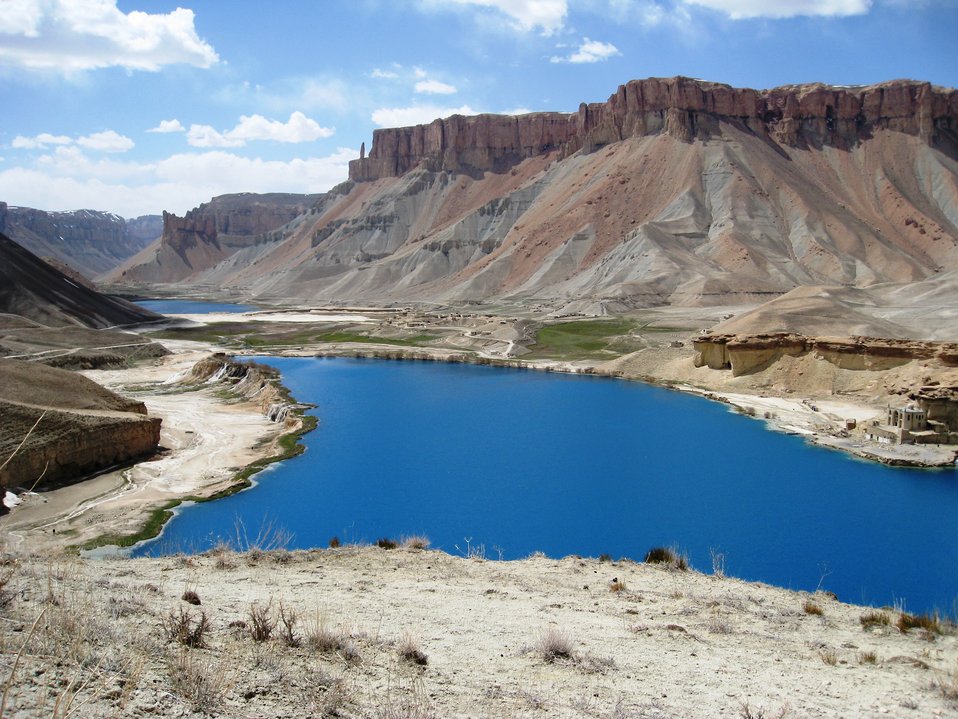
bamiyan 042908-nc 087

The beauty of the area’s six cobalt-blue Band-e-Amir lakes always stuns visitors to central Bamyan province. Natural travertine dams, created by calcium deposits over many years, support the lakes. They stretch across the valley in long graceful arcs, and merge into a strikingly beautiful landscape of stone, desert, and water. The vistas rival those of national parks anywhere in the world.
USAID, through its implementing partner the Wildlife Conservation Society (“WCS”), has been working since 2006 to develop the institutions and foster the consensus needed for the formation of a national park in the lakes area. The efforts ultimately resulted in the Earth Day declaration in 2009, of Band-e-Amir as Afghanistan’s first national park by the Director General of Afghanistan’s National Environmental Protection Agency (NEPA).
Afghanistan’s Environment Law requires local management of protected areas. To fulfill that mandate, WCS initially educated the residents in the 13 villages located within the territory of the park about the economic opportunities that national park status would provide. The Band-e-Amir Protected Area Committee (BAPAC) recruited villagers to be members. BAPAC and WCS jointly prepared a management plan for the park, and WCS assisted local officials in successfully navigating the national park proposal process.
With USAID support, WCS is now training rangers to protect the flora and fauna in the park, and is educating the provincial and national government officials who must manage park operations and ensure sustainability. WCS continues to help the government develop laws and policies on protected areas and species, and community-based natural resource management.
In anticipation of national park status, local entrepreneurs had already begun building small shops, restaurants, and hotels to serve tourists. USAID-funded partners provided guidance to help them place these structures away from the most ecologically sensitive areas. Now that the park has achieved official status and protection, the local people will have the opportunity to protect, preserve, and profit from this beautiful landscape.